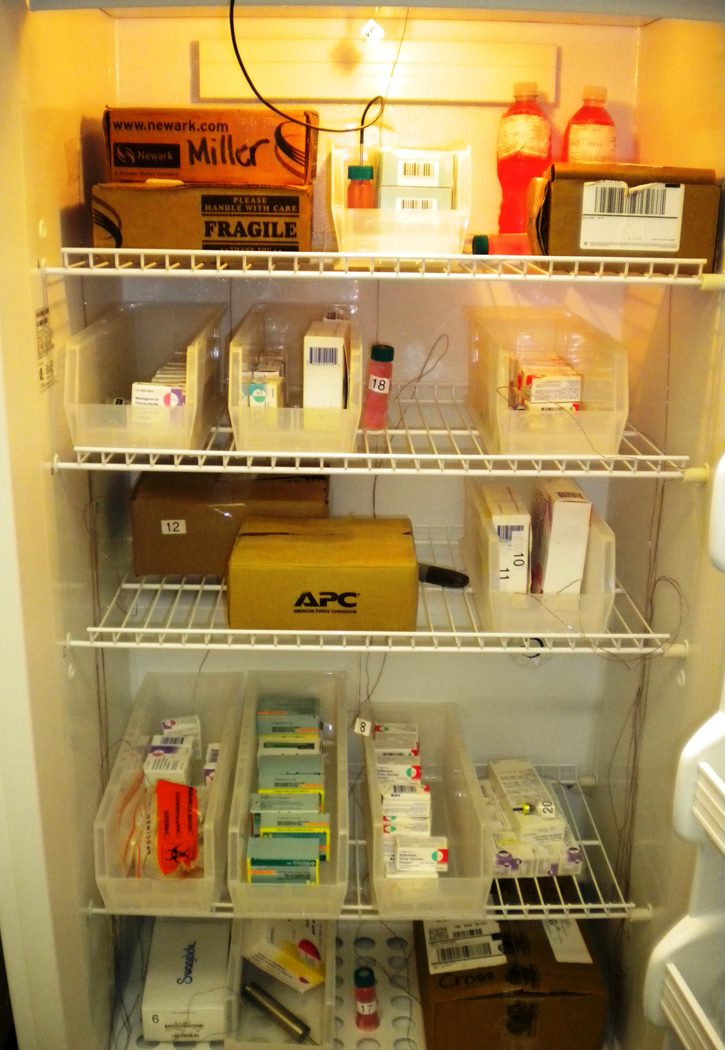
Vaccine; Temperature; Refrigerator

According to a NIST study, vaccines that have not been removed from their packaging (most often a cardboard box), retain their temperature longer than those that have been unpacked and placed in trays. Moreover, the standard-sized refrigerators ability to maintain proper temperature was unaffected by how much vaccine the researchers stored in the refrigerator, a characteristic that was not shared by the dormitory style refrigerators.